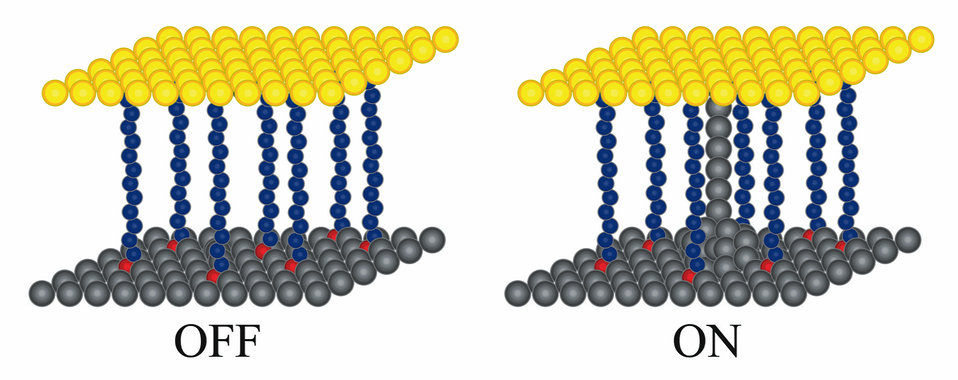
Nanoelectronic Switch

Silver nanoswitch: when the voltage between a gold conductor (top) and silver conductor (bottom) exceeds a critical point, silver ions rapidly assemble like a lightning strike to bridge the gap through a organic molecule monolayer.